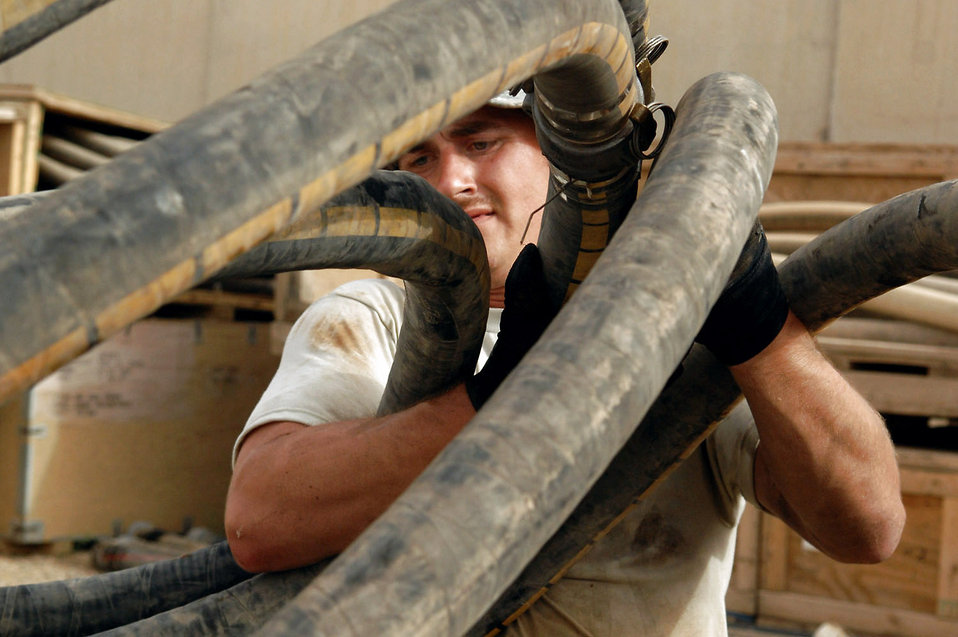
All tangled up

Tech. Sgt. David Follmuth reconfigures a fuel hose at Kirkuk Air Base, Iraq. Sergeant Follmuth is assigned to the 506th Expeditionary Logistics Readiness Squadron and deployed from Grand Forks Air Force Base, N.D.